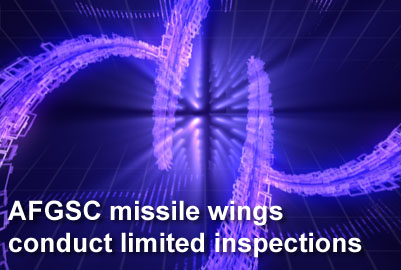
AFGSC missile wings conduct limited inspections

Each of Air Force Global Strike Command's three missile wings successfully passed a no-notice limited nuclear surety inspection Dec. 8, 2009.